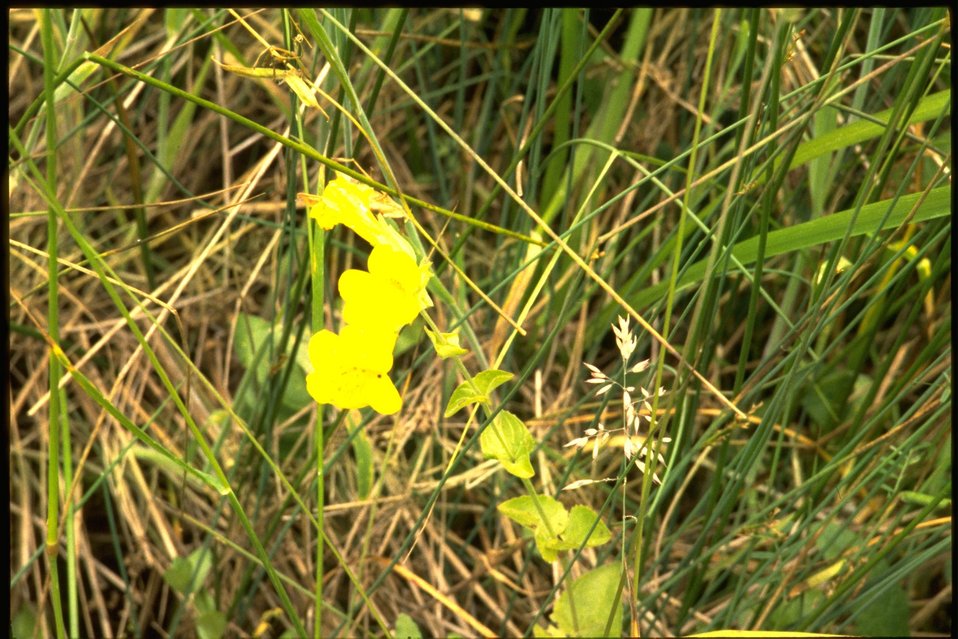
Medium shot of Mimulus guttatus.